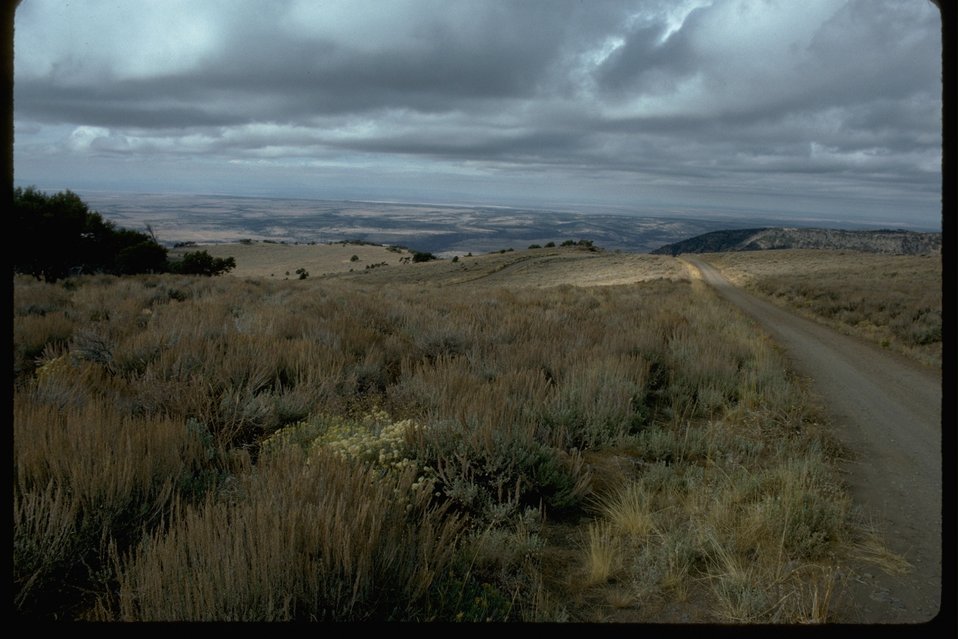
Steens Mountain National Back Country Byway on top of Rooster Comb. View to West.